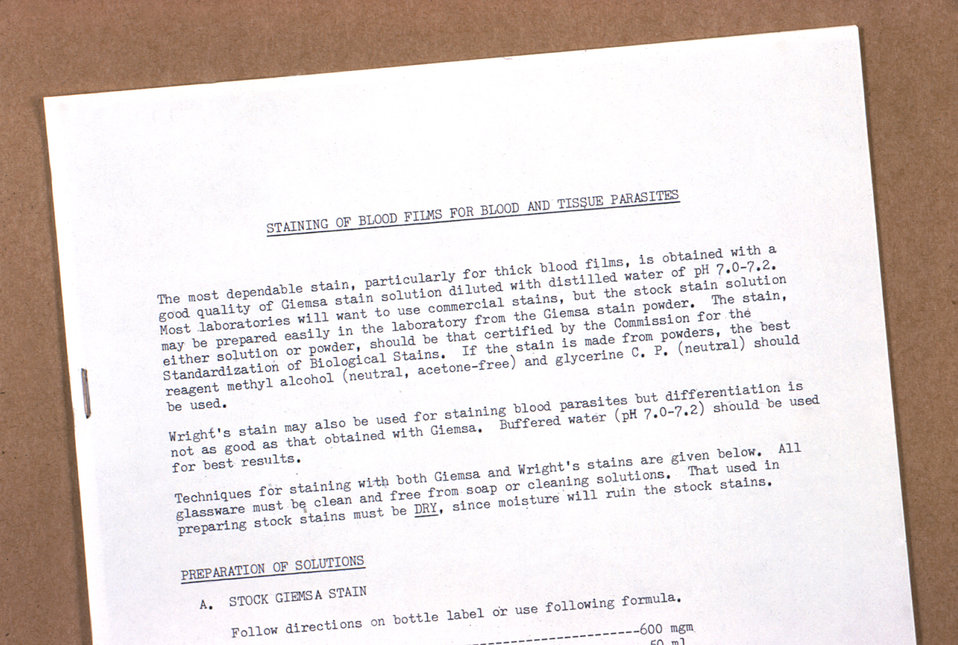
This is a textual description of the formulae followed when mixing buffers that are used during the preparation of Giemsa stain.